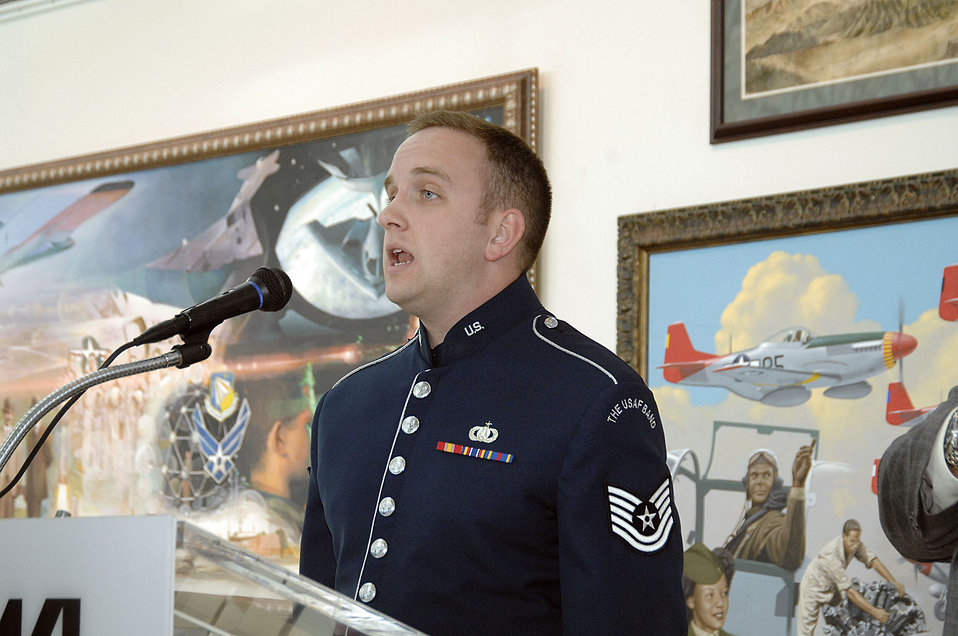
AF heritage, history on display at BWI airport

Tech. Sgt. Michael Mason, a vocalist with the U.S. Air Force Band at Bolling Air Force Base, D.C., sings the national anthem Feb. 5 during the official opening ceremony of an Air Force Art Program exhibit at the Baltimore Washington International Thurgood Marshall Airport. The exhibit, on display through July 30, features nearly 50 pieces from the Air Force art collection highlighting the service's rich diversity, heritage and history.